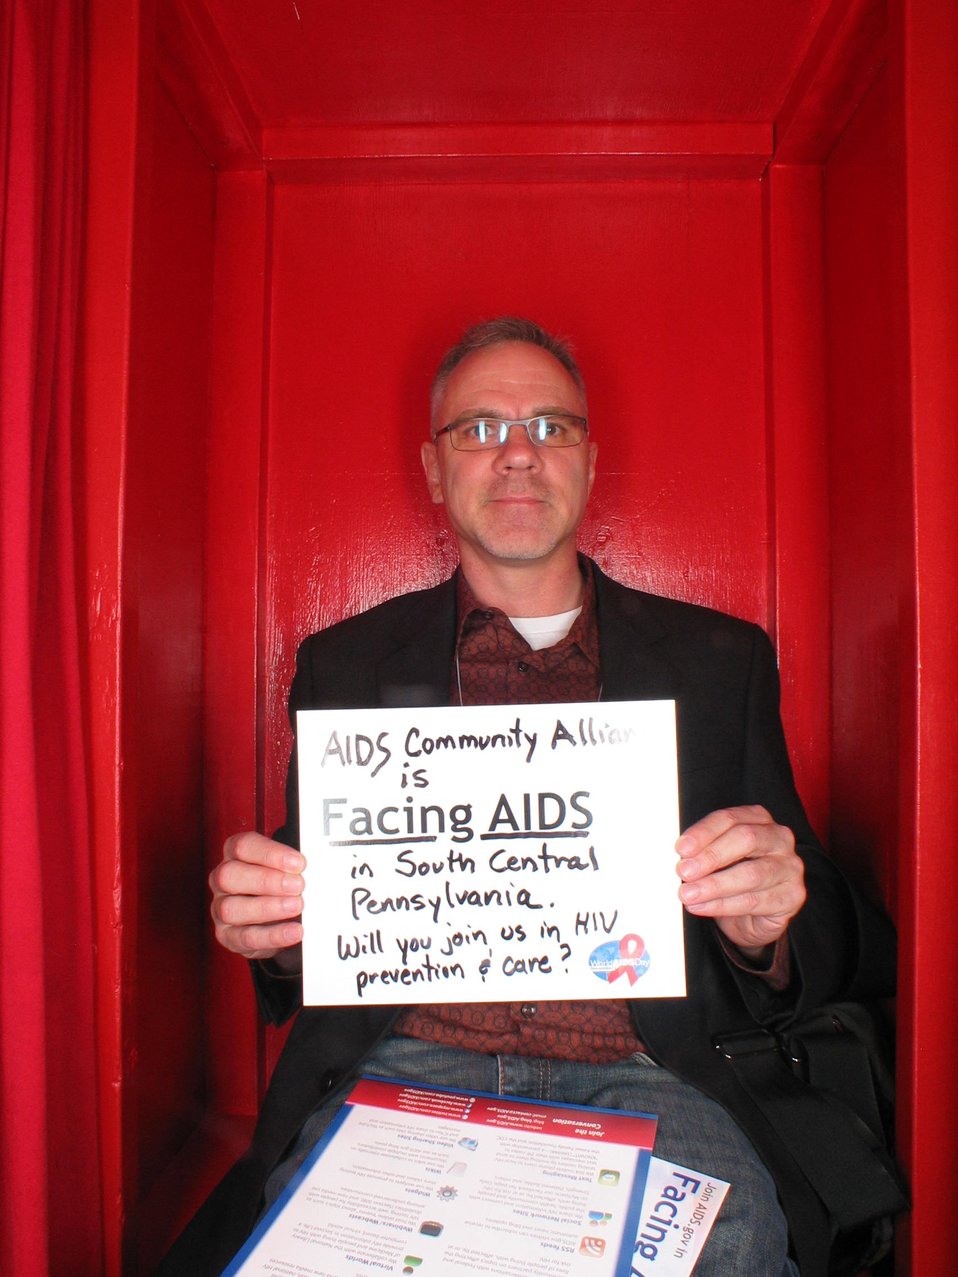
Facing AIDS in South Central Pennsylvania. Will you join us in HIV prevention and care?